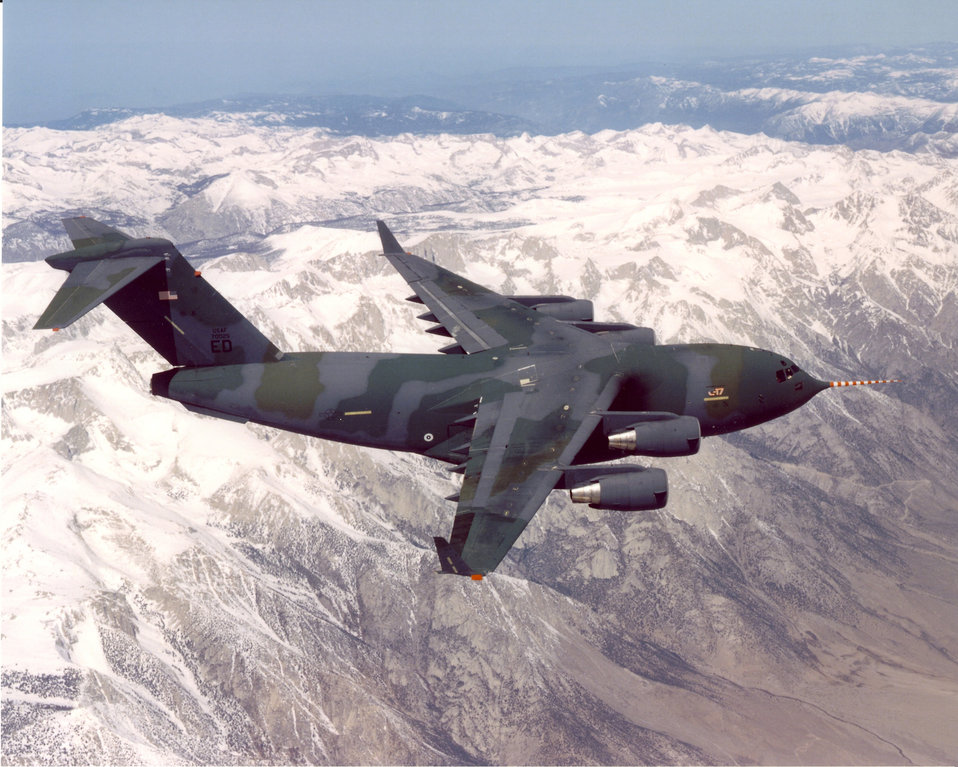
C-17's first flight

The versatile C-17 Globemaster III transport completed it first flight Nov. 15, 1991 at Edwards Air Force Base, Calif.